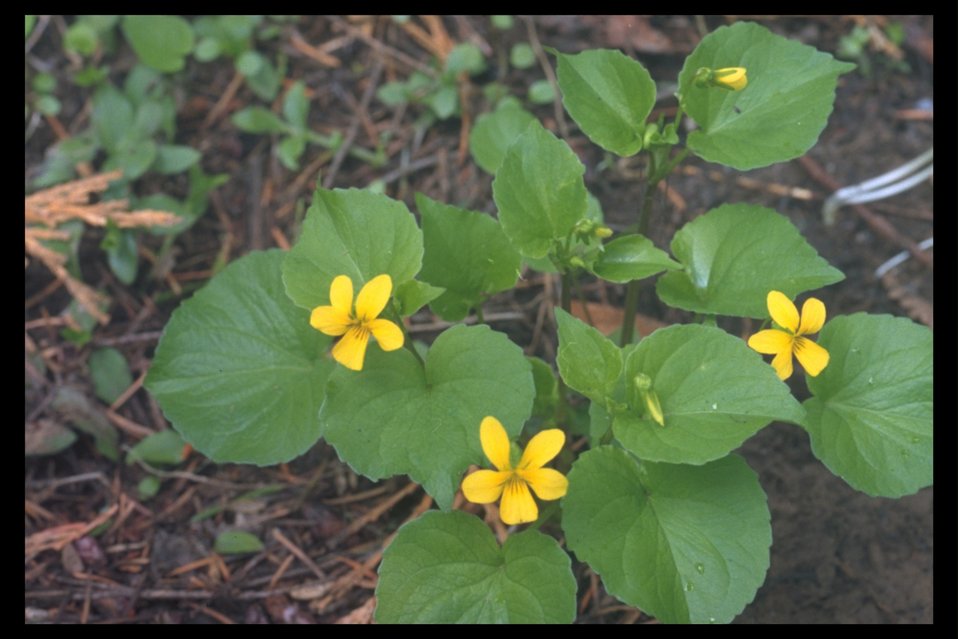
Stream Violet, or Smooth Woodland Violet (Viola Glabella) at Ward's Creek near town of Rogue River.